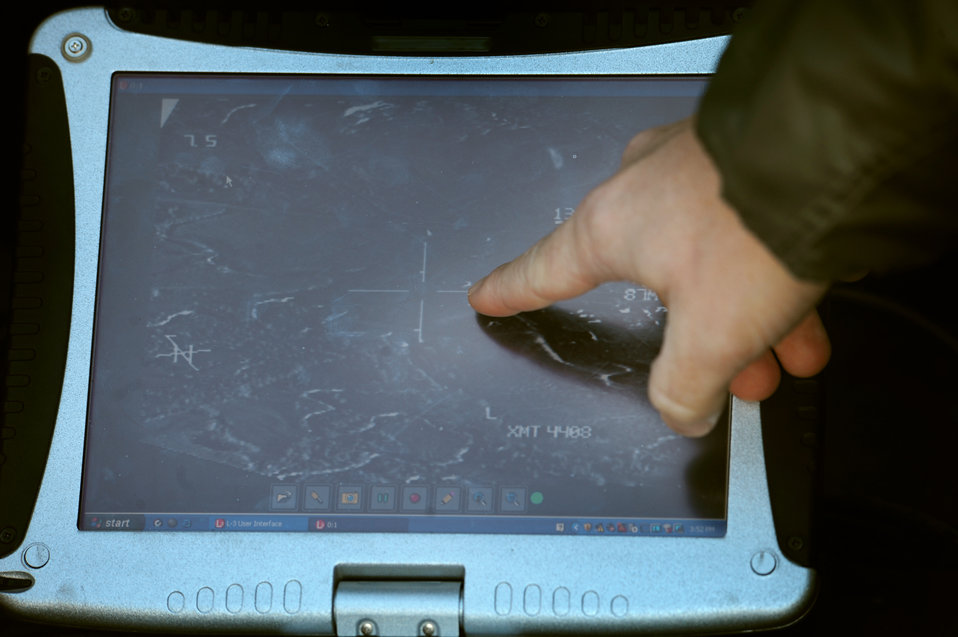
US, Canadian JTACs

Maj. Jan-Peter Linch examines live Sniper pod footage during a joint-nation training mission with Canadian joint terminal attack controllers Oct. 28, 2010, in Alzada Mont. The Sniper advanced targeting pod, which provides positive target identification, autonomous tracking, coordinate generation and precise weapons guidance from extended standoff ranges is used in support of air to ground operations. Major Linch is the 37th Bomb Squadron wing weapons flight commander.